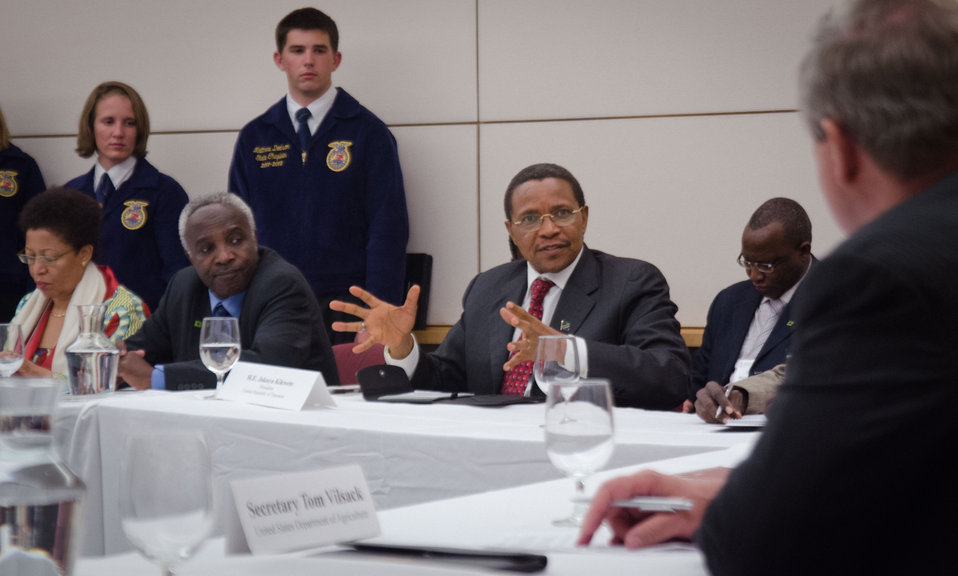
President of the United Republic of Tanzania His Excellency Jakaya Kikwete makes remarks at the African Heads of State conference at the Ronald Reagan Federal Building in Washington, D.C., on Friday, May 18, 2012.